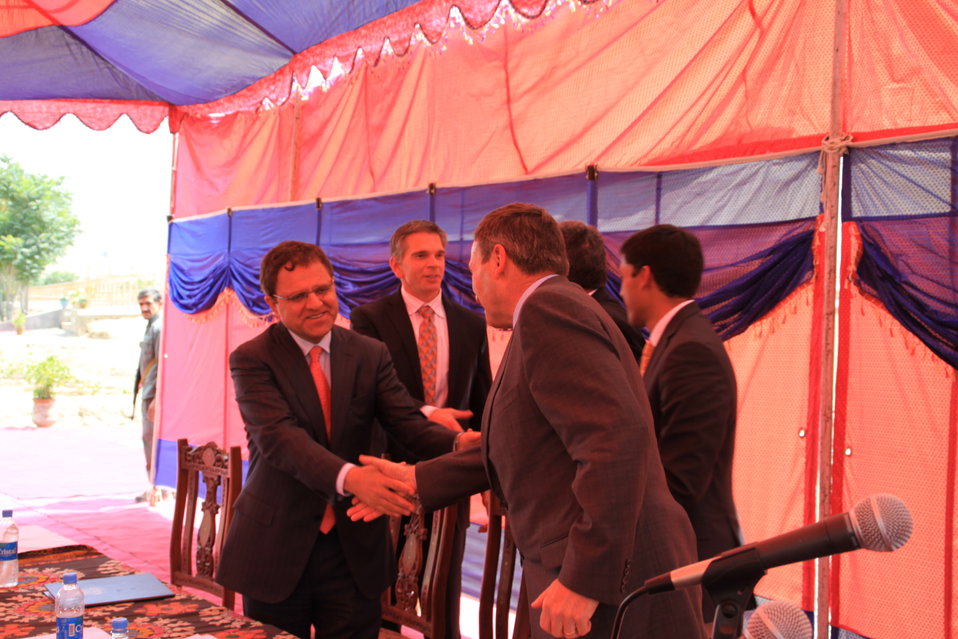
Badam Bagh Farm